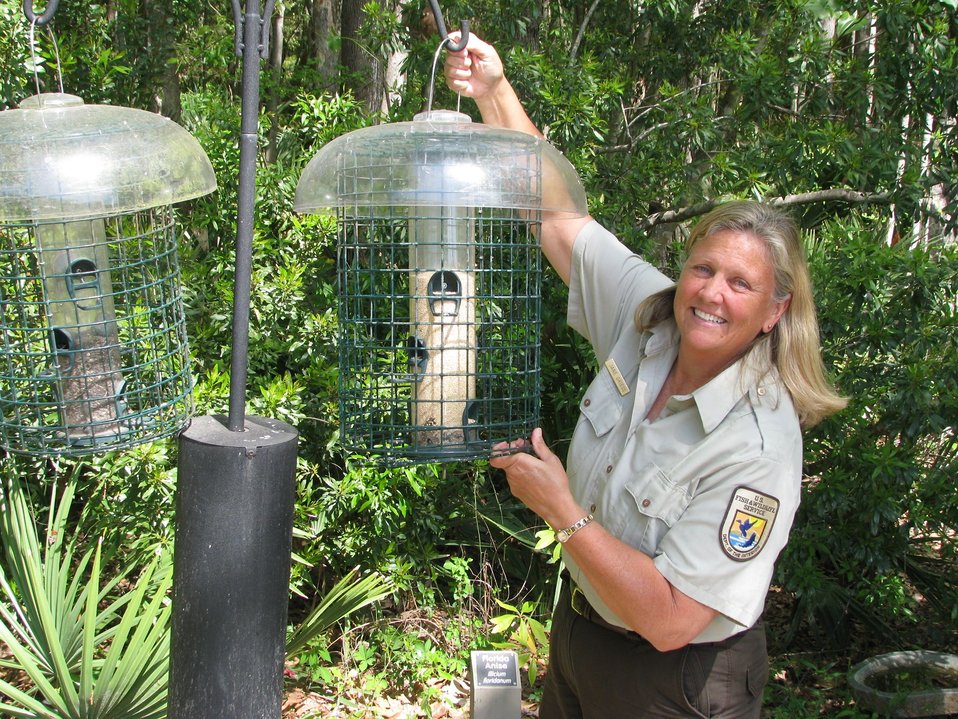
Jane Griess at Savannah Wildlife Refuge

Jane Griess, manager of Savannah National Wildlife Refuge and the six other refuges along the South Carolina and Georgia coasts, says she first learned her love of nature at the feet of her mom, Margaret Griess. “She even gave me my own caterpillar cage for my birthday one year,” says Jane.